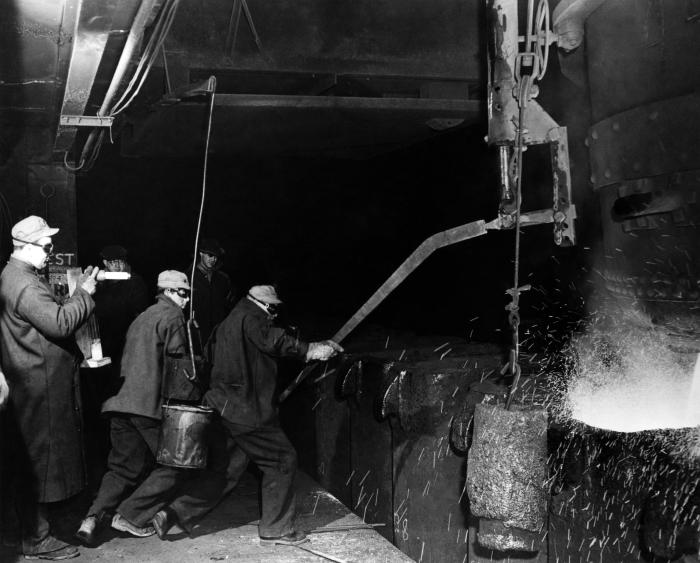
This historic image was provided by the Center for Disease Control's (CDC), National Institute for Occupational Safety and Health (NIOSH), depicted two industrial workers operating the stopper in the act of pouring an ingot of 'rimmed steel', inside a steel works. Rimmed steel is a low-carbon form of the metal, which contains iron oxide in a quantity that causes the mixture to release a continuous flow of the toxic gas, carbon monoxide (CO), during the hardening of the ingot. This process ends with the creation of a 'case', or 'rim' of the metal, which is for the most part, free of pockets, or voids. The surface of rimmed steel-made products, reveal a very high-quality character. The CO released, in such high quantities made proper ventilation paramount in these factories. A industrial hygienist could be seen taking air samples around the workers. This photograph was published in the 1948, edition No. 299 of the 'Public Health Bulletin'.